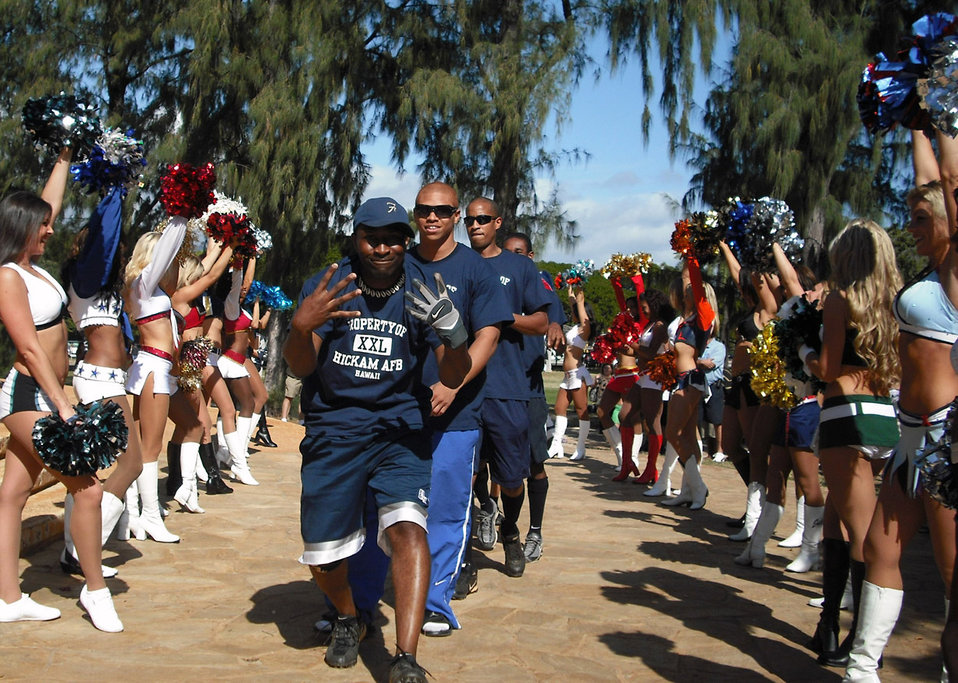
NFL Military Challenge

Capt. Marcus Fox leads the Air Force team through a procession of NFL cheerleaders during opening ceremonies of the NFL Military Callenge Feb. 7 in Oahu's Kapiolani Park. Captain Fox participated in the Air Force's first place finishes in the 40-yard dash, quarterback challenge and 'suicide' competitions.